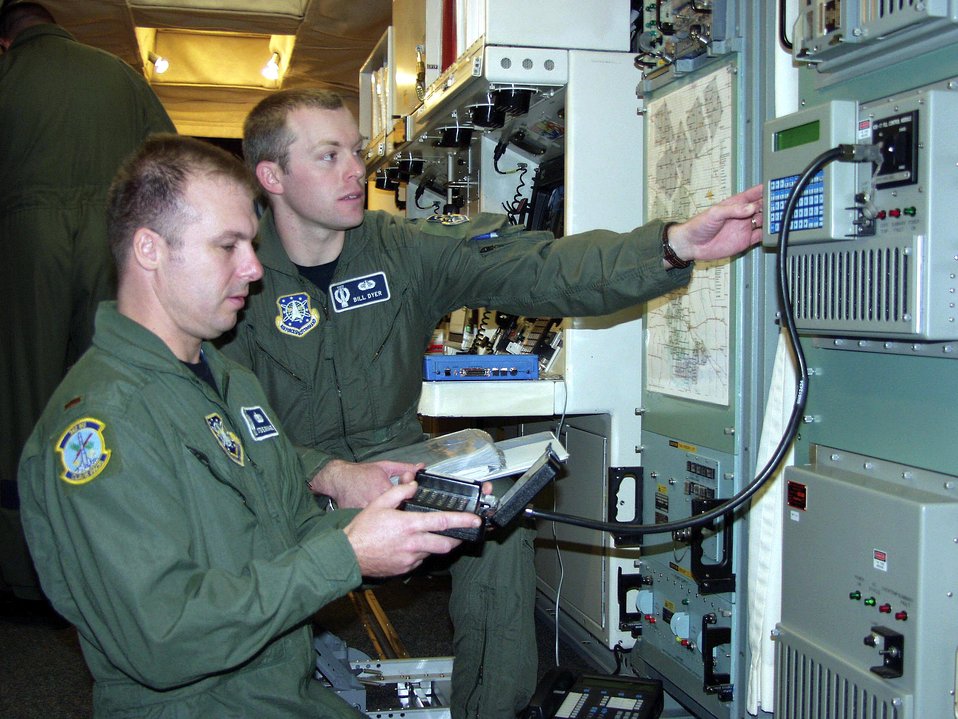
MEECN

MINOT AIR FORCE BASE, N.D. (AFPN) -- Second Lt. Stephen Grinage (left) and 1st Lt. Bill Dyer do a very low frequency key load for the minimum essential emergency communication network at the Oscar-01 missile alert facility. The completion of Oscar-01, on Nov. 11, marked the final modification to the last of 50 launch control centers. Lieutenants Grinage and Dyer are with the 742nd Missile Squadron.